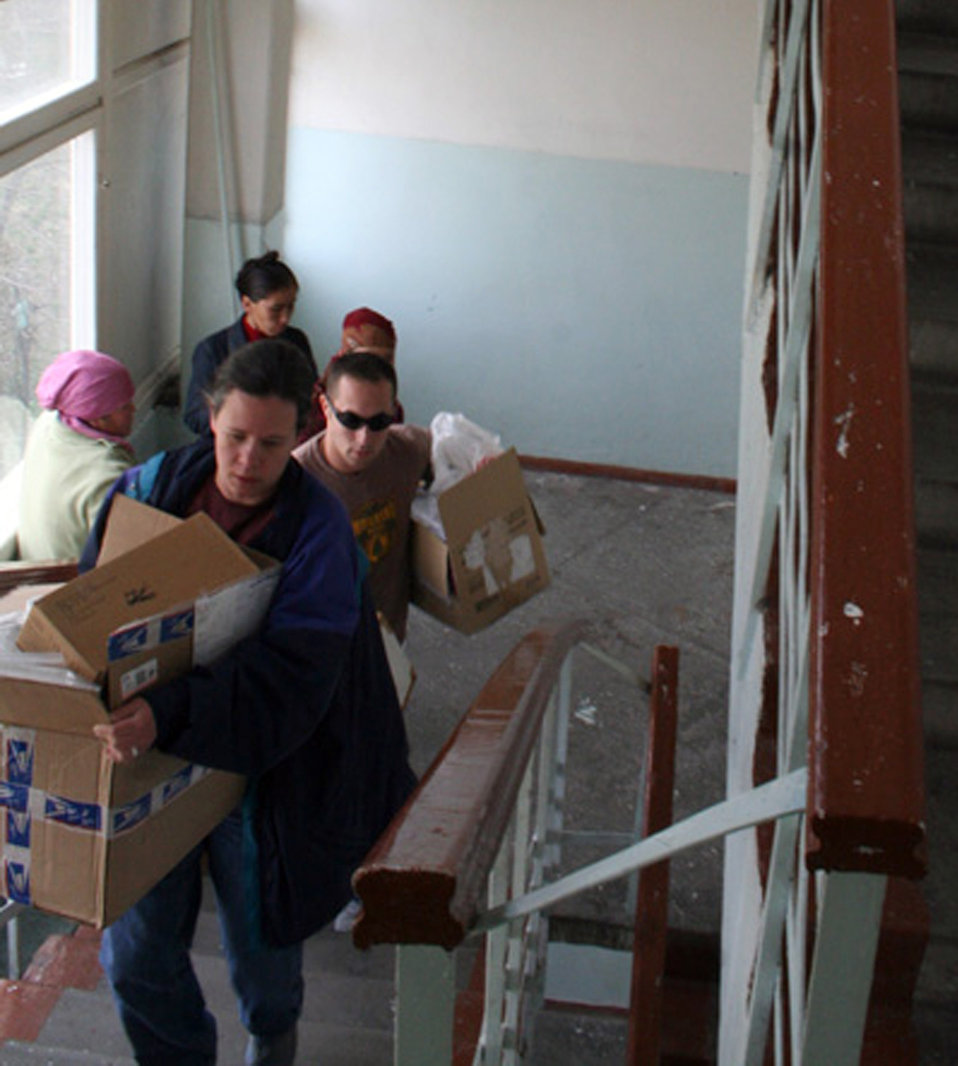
Airmen help improve medical facilities

Airmen carry boxes of donated medical supplies, linens, treats and toys to a burn ward on the third floor of the Bishkek Trauma Center in Kyrgyzstan. Working with the Manas Air Base Outreach Society, an all-volunteer organization, Maj. (Dr.) Stephania Timothy and others on her surgical team are helping develop a rehabilitation program for the ward to help improve patients' recovery. The surgical team is deployed to the 376th Medical Group from the 10th Medical Operations Squadron at the Air Force Academy in Colorado.